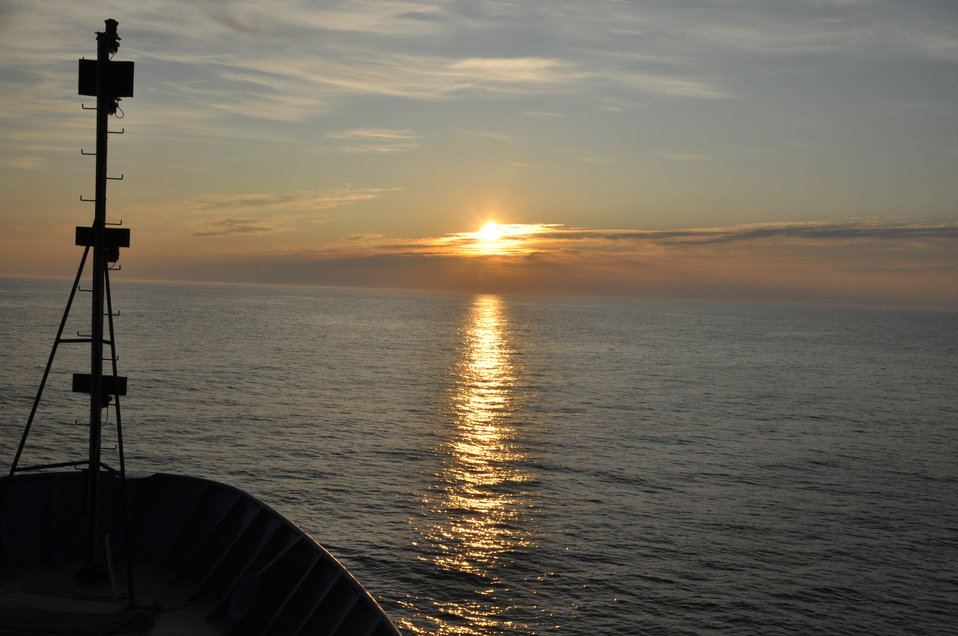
July 2009, Watching the sun rise and set from the bow of the ship... breathtaking.

The sunrise (on a clear morning) made the 4 am shift worth it!